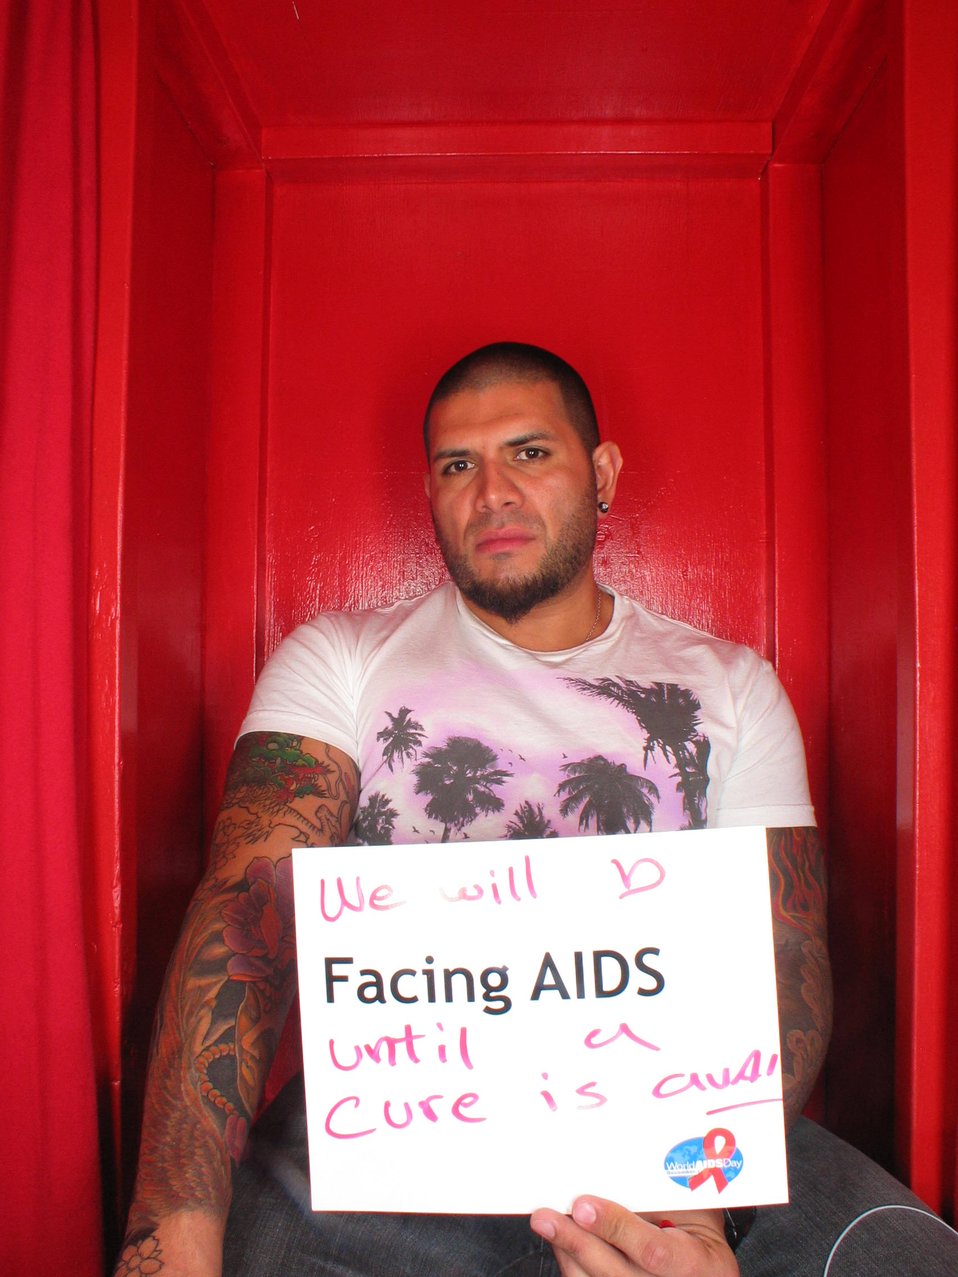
We will b Facing AIDS until a cure is found.